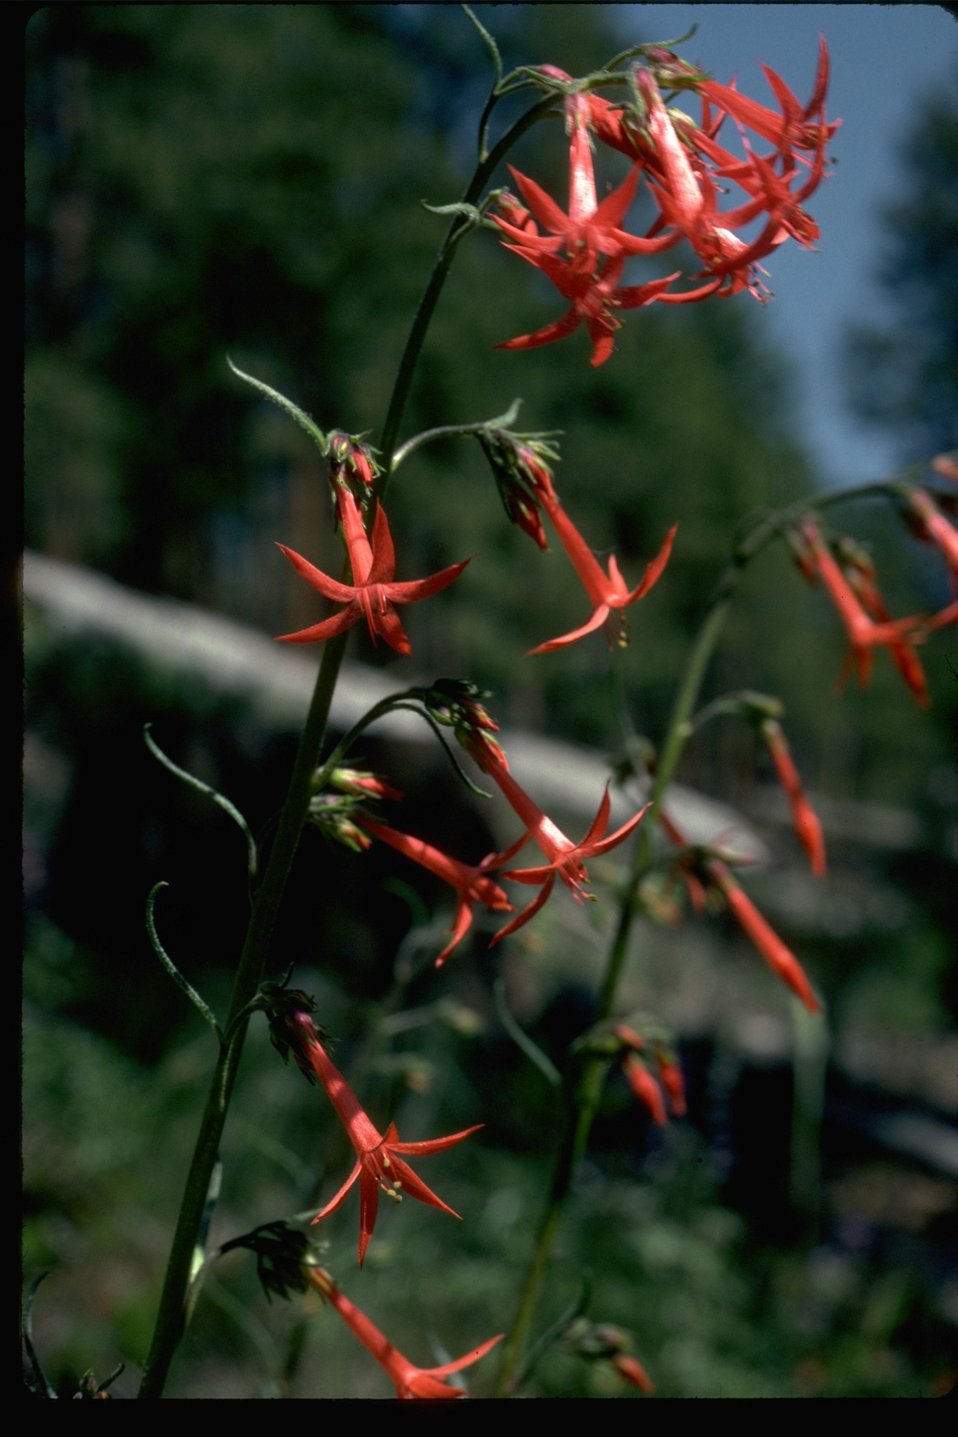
Gilia Aggregata